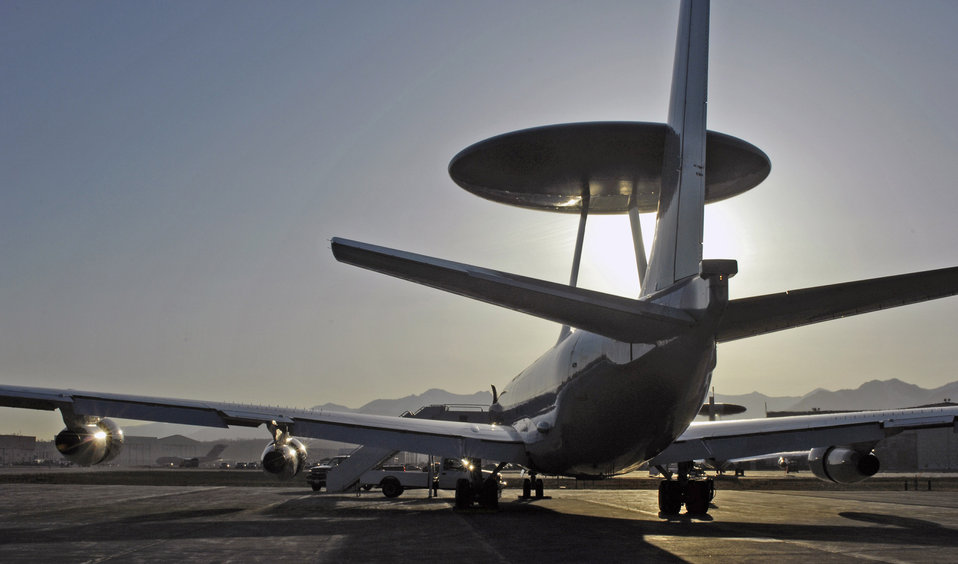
Red Flag-Alaska ends

A NATO E-3 Airborne Warning and Control System faces an Alaska sunrise before takeoff during participating in Red Flag Alaska 09 on Friday, May 1. This exercise enables flying squadrons to enhance their fighting capabilities in simulated combat sorties in a realistic threat environment.